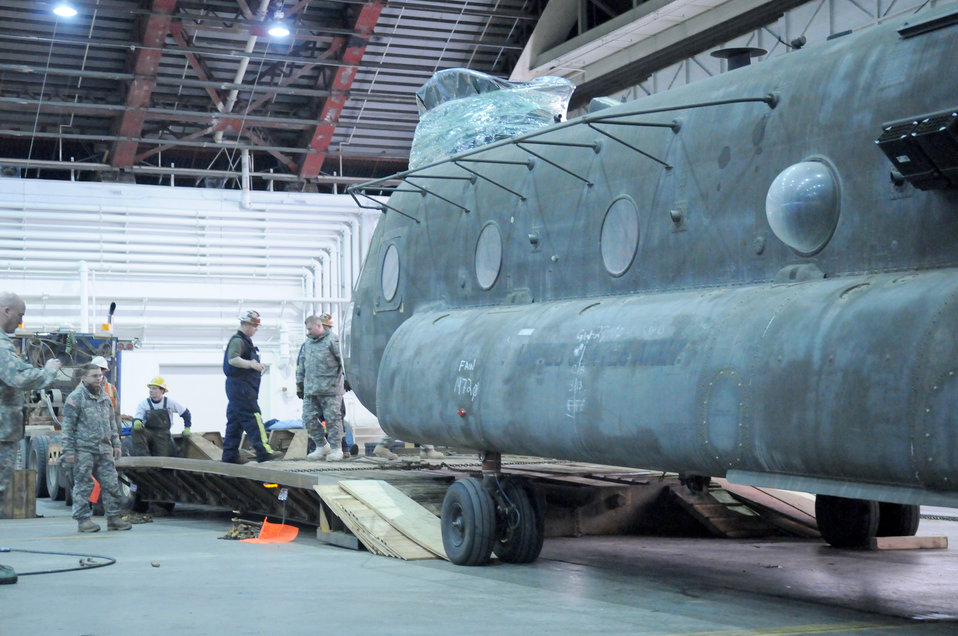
Chinook move

Soldiers load a CH-47 Chinook onto a specially built trailer Dec. 15, 2010, at Eielson Air Force Base, Alaska. After its delivery by C-17 Globemaster III, Soldiers were assisted by Airmen to move the CH-47 to Fort Wainwright, Alaska. The Soldiers are assigned to the 16th Combat Aviation Brigade.